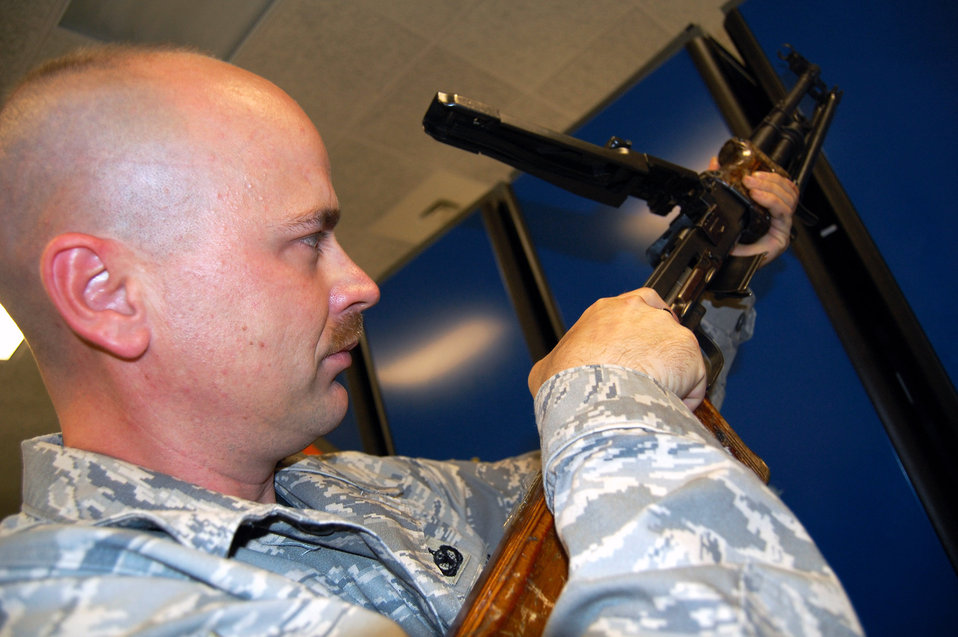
Expeditionary Center armory fires up training for Airmen

Tech. Sgt. Charles Glunt inspects a foreign-made machine gun while working in the armory Sept. 22 at Fort Dix, N.J. Sergeant Glunt is the Air Force Expeditionary Center armory noncommissioned officer in charge. He and three other Airmen manage 48 different weapons systems and 153 different types of foreign weapons in their armory -- the most foreign weapons than any armory in the Air Force. The weapons they care for support more than 7,000 students annually who attend the center's expeditionary courses.